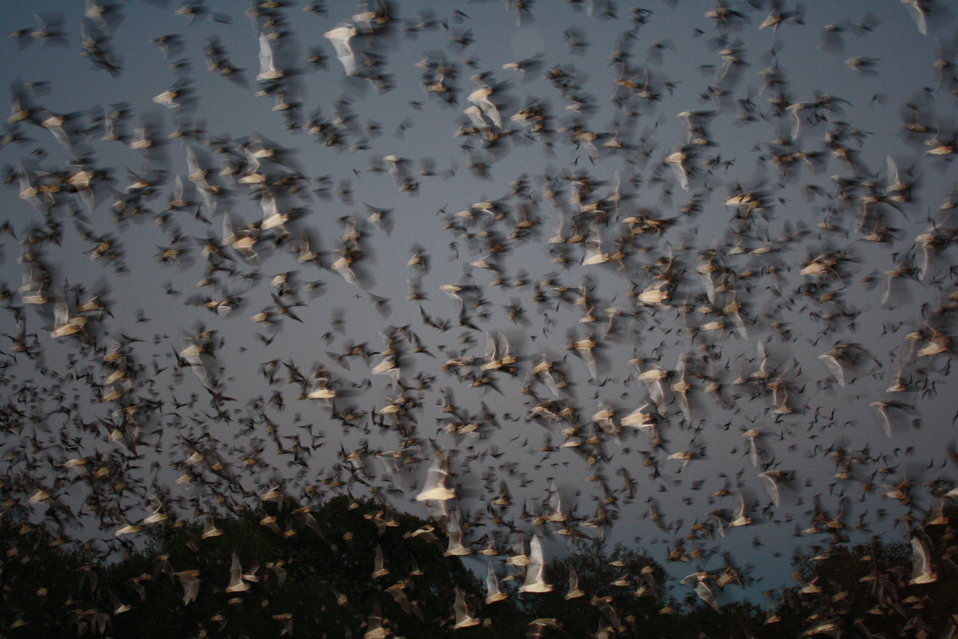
Mexican free-tailed bats exiting Bracken Bat Cave